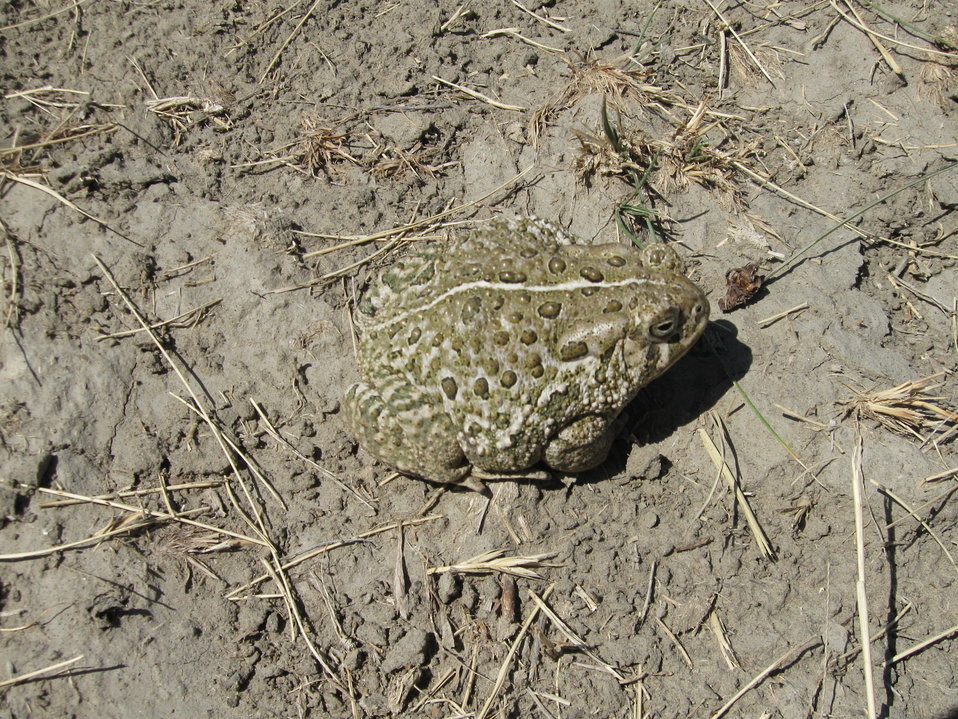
Woodhouse's toad photographed at Charles M. Russell National Wildlife Refuge. This species is fairly common in southeast Montana.